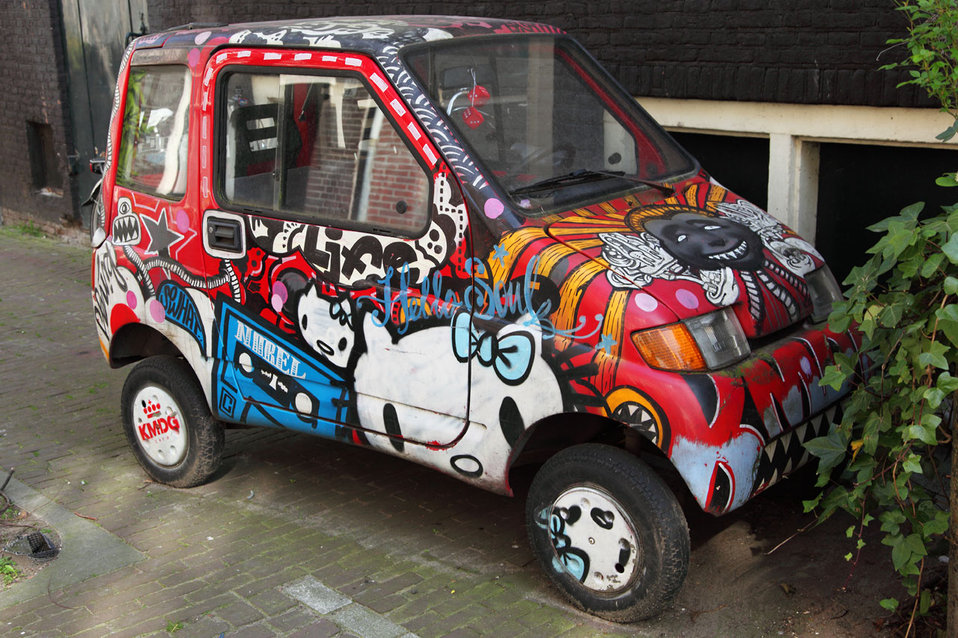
Graffiti car

Small graffiti car in amsterdam.